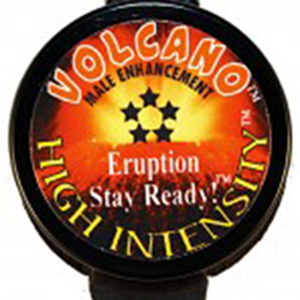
RECALLED - Marketed as a Dietary Supplement

July 18, 2013 – Product Recall – Volcano Company, Issues Voluntary Worldwide/Nationwide Recall of Volcano Male Enhancement Liquid and Volcano Male Enhancement Capsules, Marketed as a Dietary Supplement, Due to Undeclared Active Ingredients.